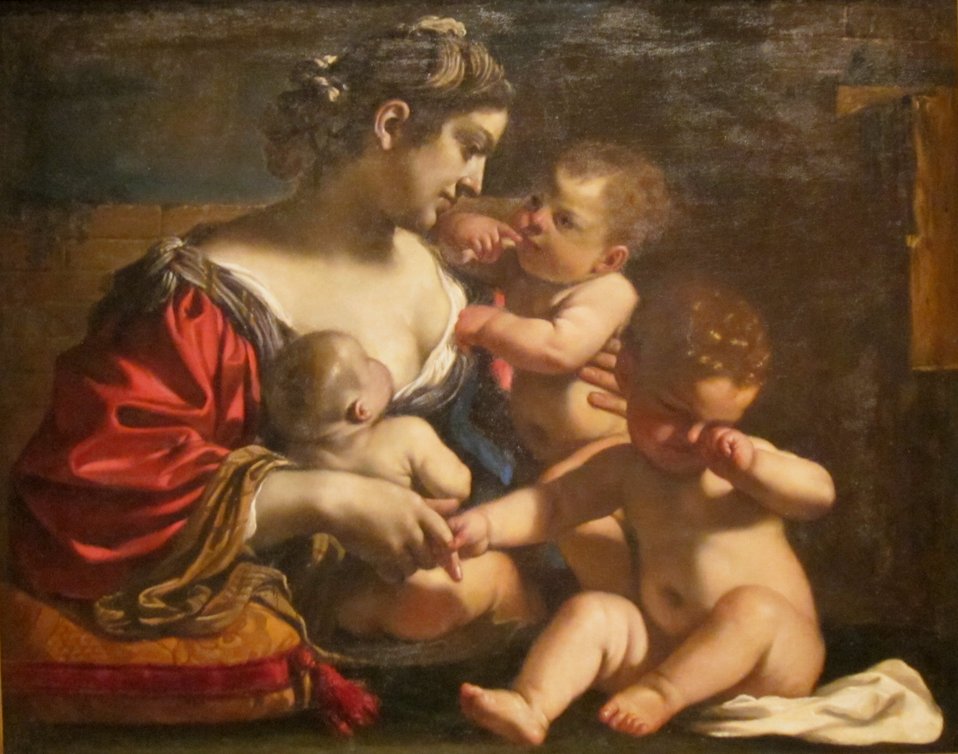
'Christian Charity' by Il Guercino, Dayton Art Institute